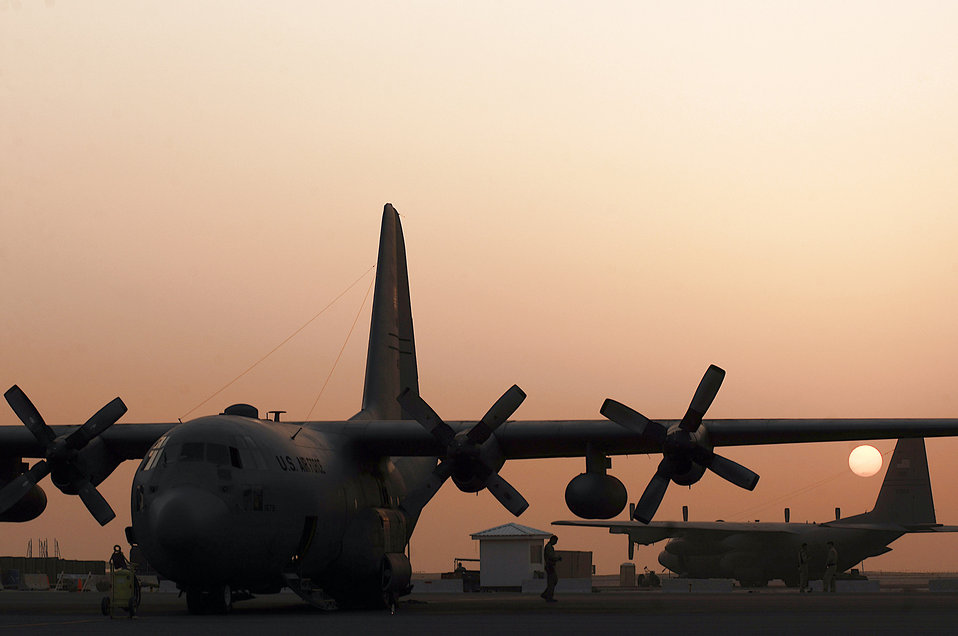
Feb. 14 airpower summary: C-130s support coalition forces

C-130 Hercules aircraft stand by for missions at an air base in Southwest Asia. These aircraft will help move coalition forces and equipment throughout Operations Enduring and Iraqi Freedom.